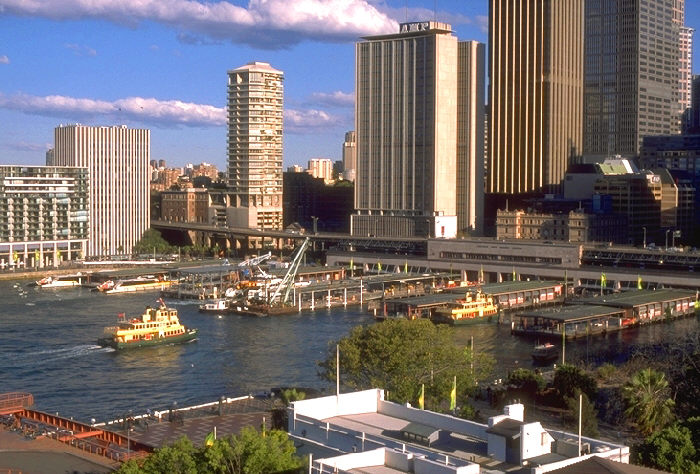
Circular Quay with ferry boats, Sydney, Australia.